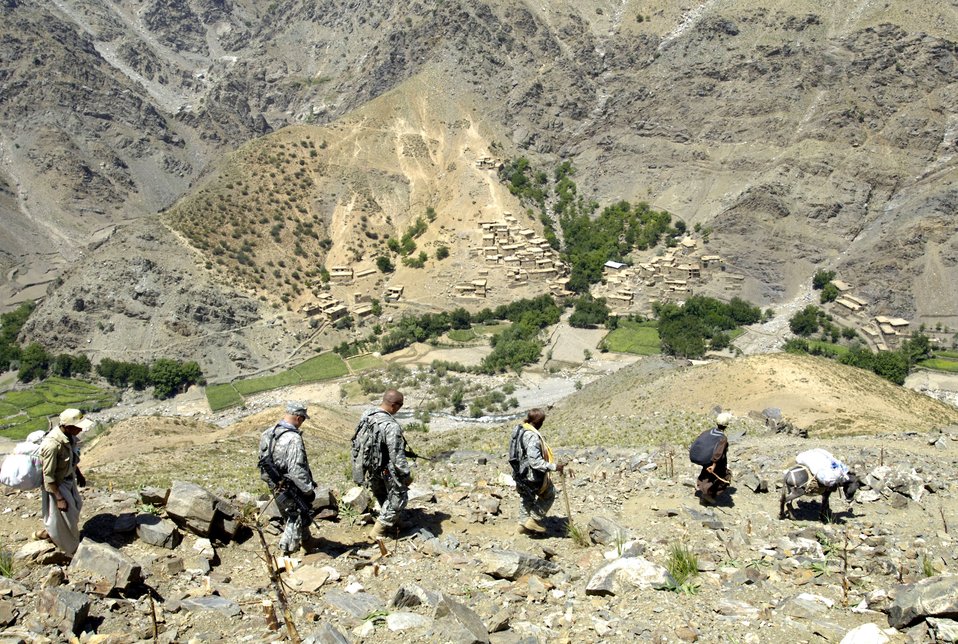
Operation Enduring Freedom (OEF)

A donkey loaded with medical supplies and humanitarian aid leads the way Aug. 7 as members of the Panjshir Provincial Reconstruction Team begin a 2,000-foot descent into a river valley. PRT members made an 11-mile round trip trek to provide medical care to Afghans living in Roydara village in the Shutol district of Panjshir province, Afghanistan.